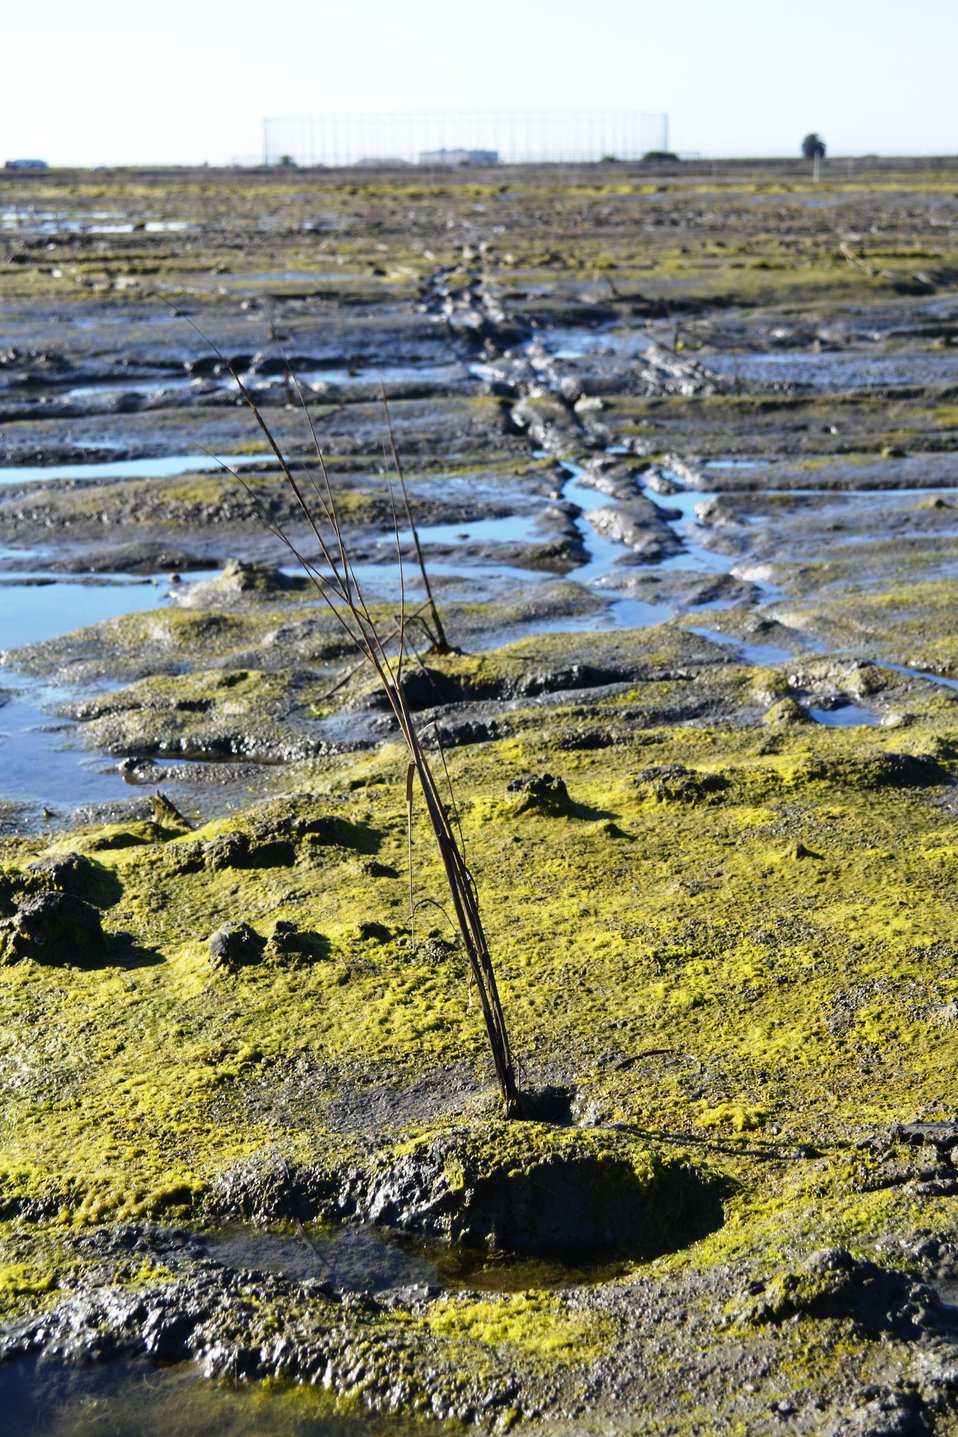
Newly transplanted cordgrass on December 8, 2011.

Planting native salt marsh plants South San Diego Bay Coastal Restoration & Enhancement Project was one of the final phases of the construction project.